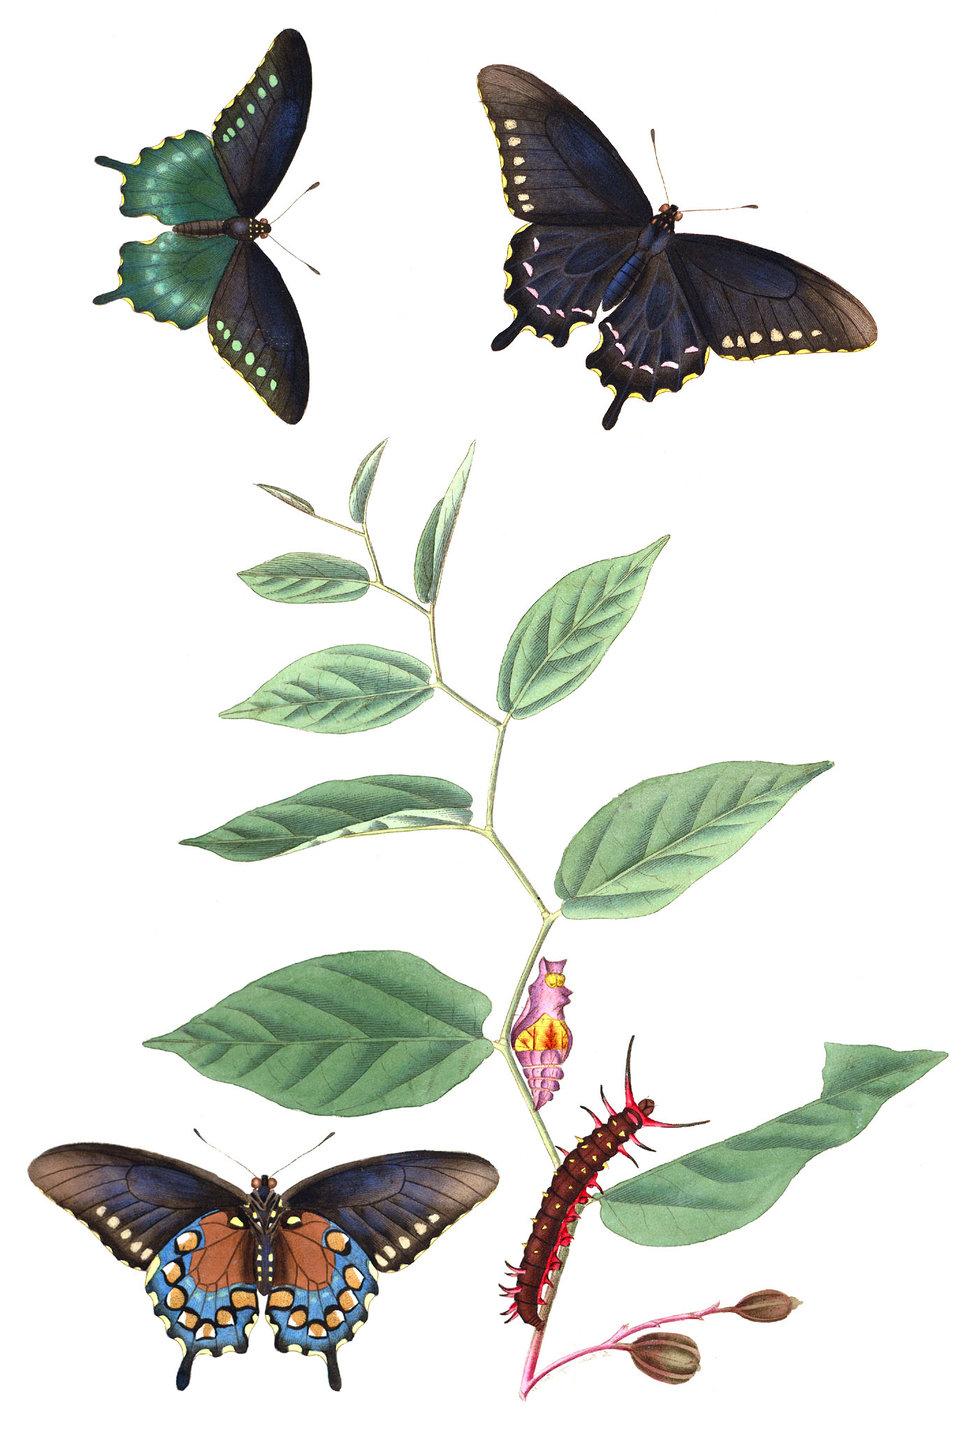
AbbotV1Tab03AA